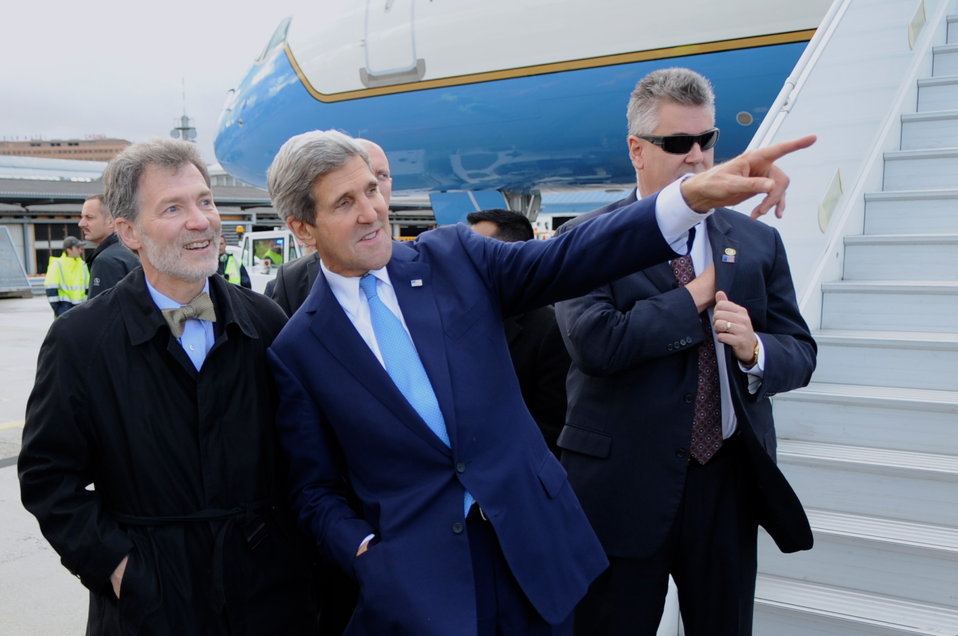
Secretary Kerry Notes the Rainbow and Snow on Mountains Before Leaving Geneva

U.S. Secretary of State John Kerry points out a rainbow and snow on nearby mountains to Peter Mulrean, the Deputy Permanent Representative at the U.S. Mission to the United Nations in Geneva, before departing Switzerland on November 10, 2013, for the United Arab Emirates.